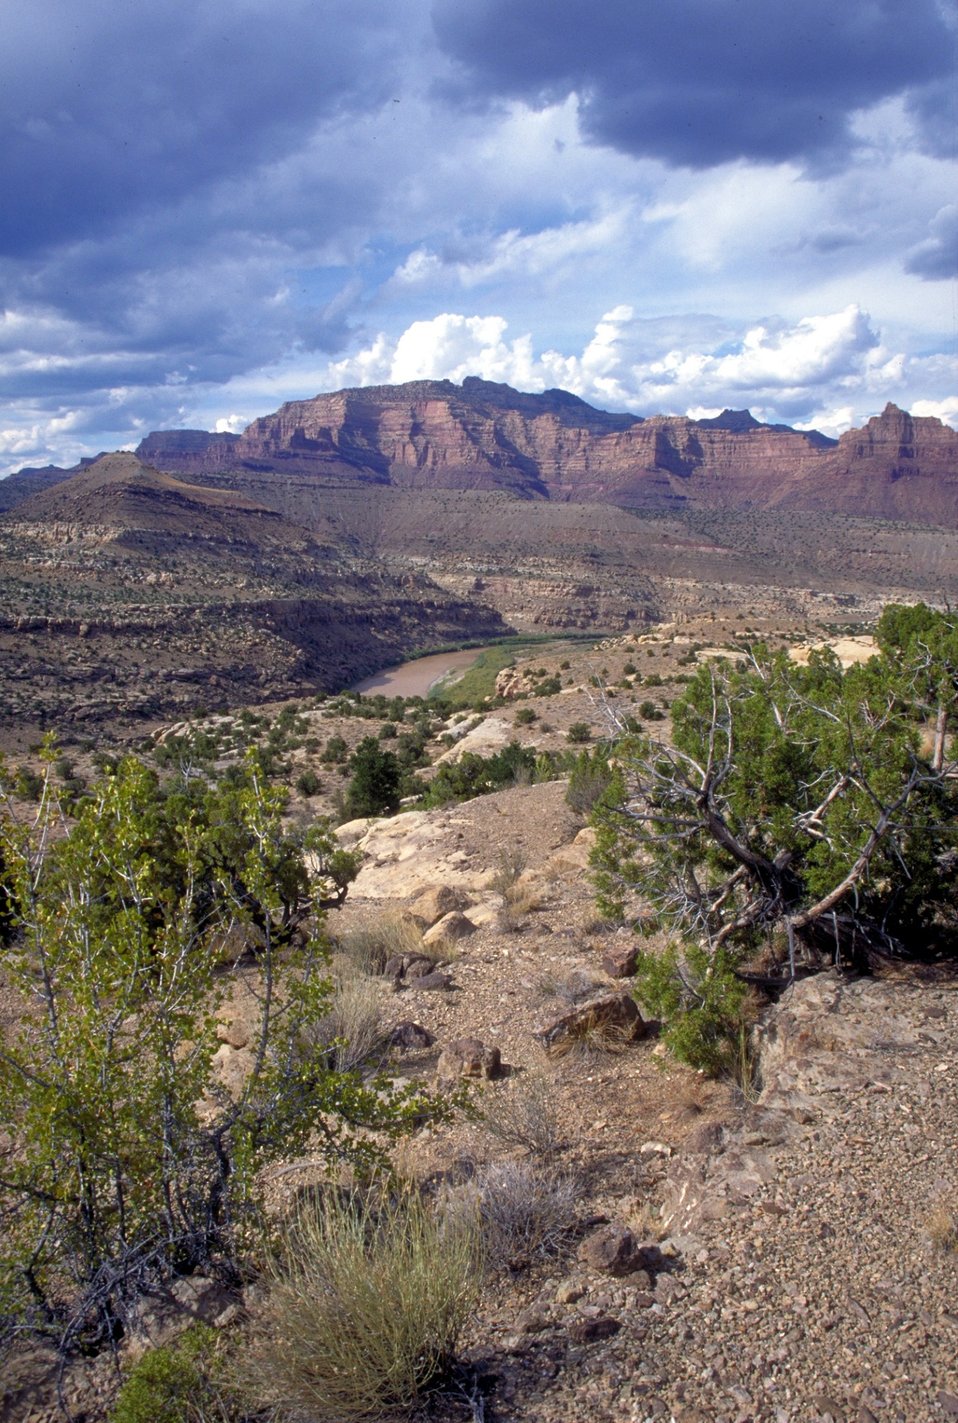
Desolation/Gray Canyons near Price, Utah.